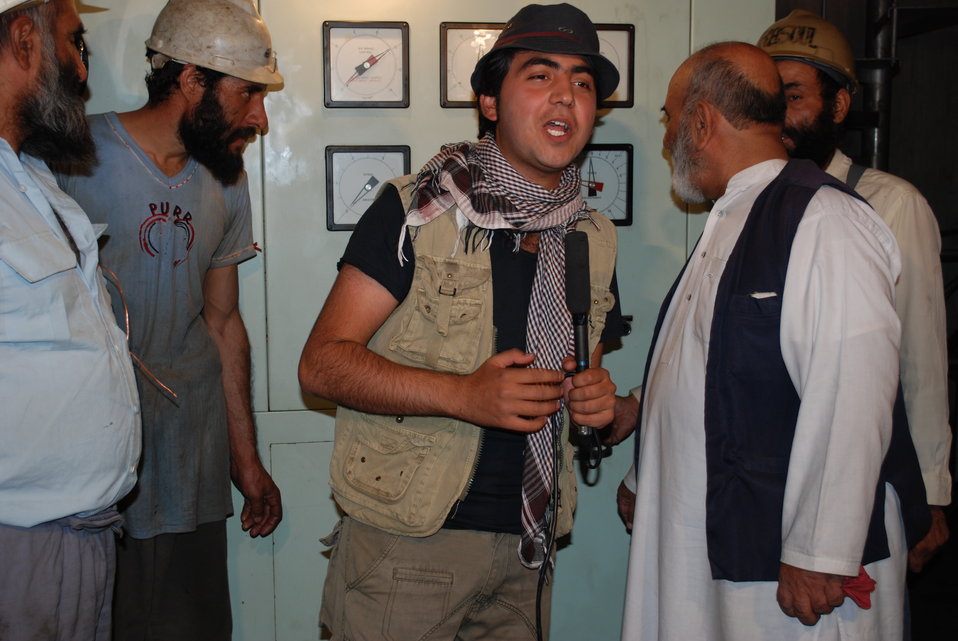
'On the Road' in Kandahar